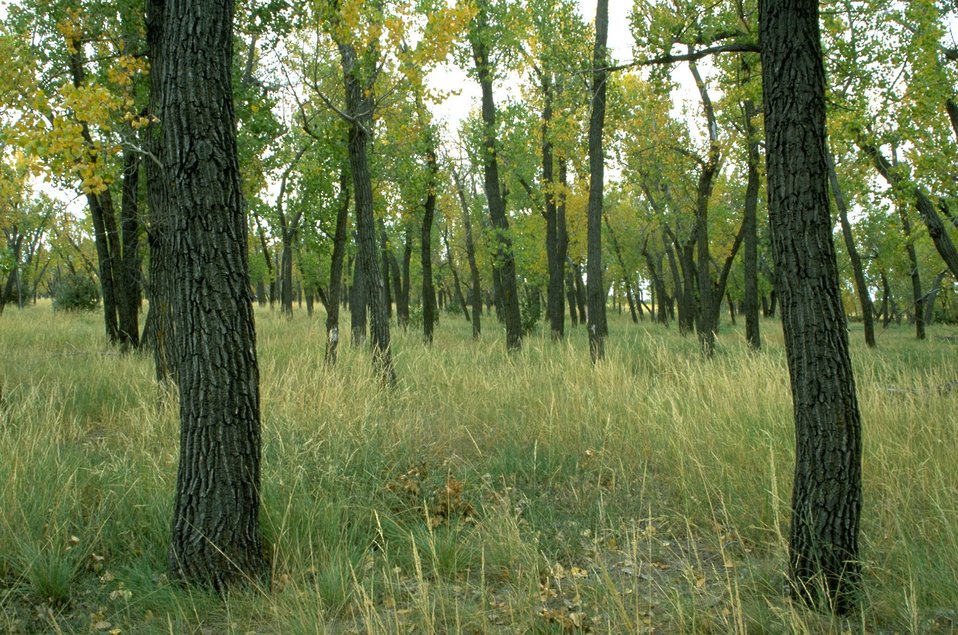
Cottonwood trees at the confluence of the Yellowstone and Powder Rivers